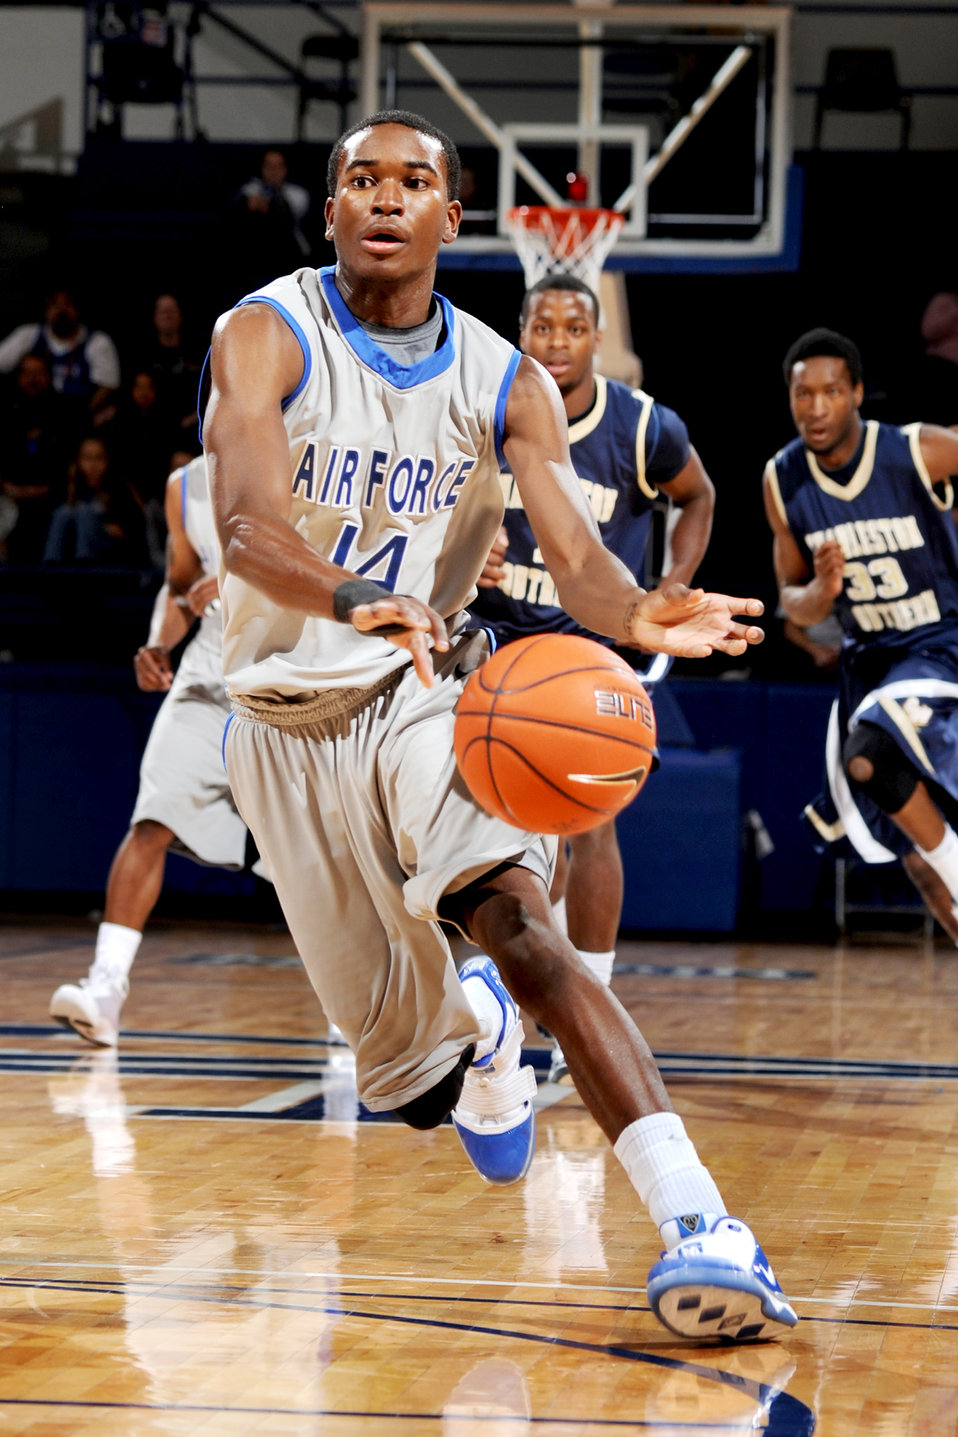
Air Force Academy

Falcons freshman guard Michael Lyons passes the ball during the Air Force-Charleston Southern match at the Air Force Academy?s Clune Arena Nov. 28, 2009. The Falcons defeated the Bucs 68-58 in a non-conference game, improving to 3-1 on the season. Air Force will host North Carolina Central here Dec. 2.